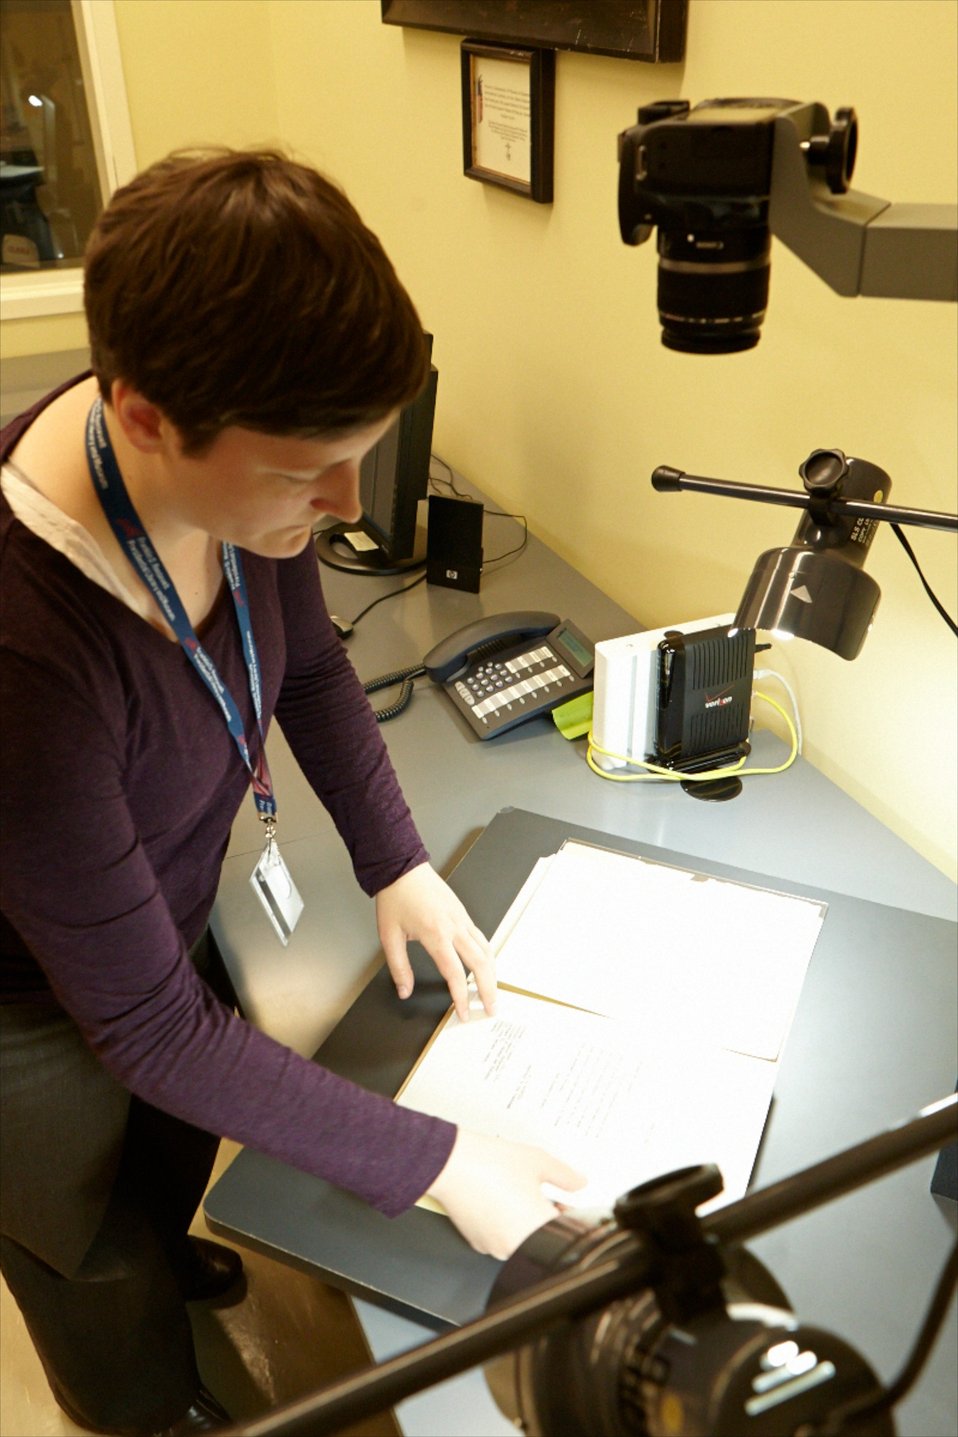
Kirsten Carter digitizes documents using one of the Library's camera stands.; Location: Franklin D. Roosevelt Presidential Library, Hyde Park, New York